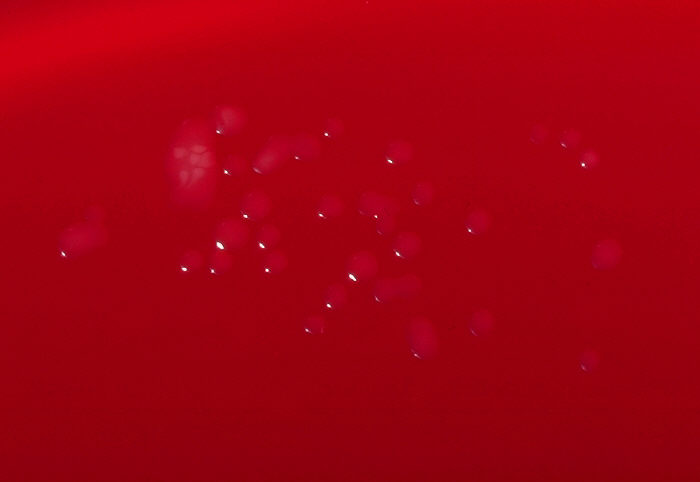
Blood agar plate culture of Corynebacterium equi.